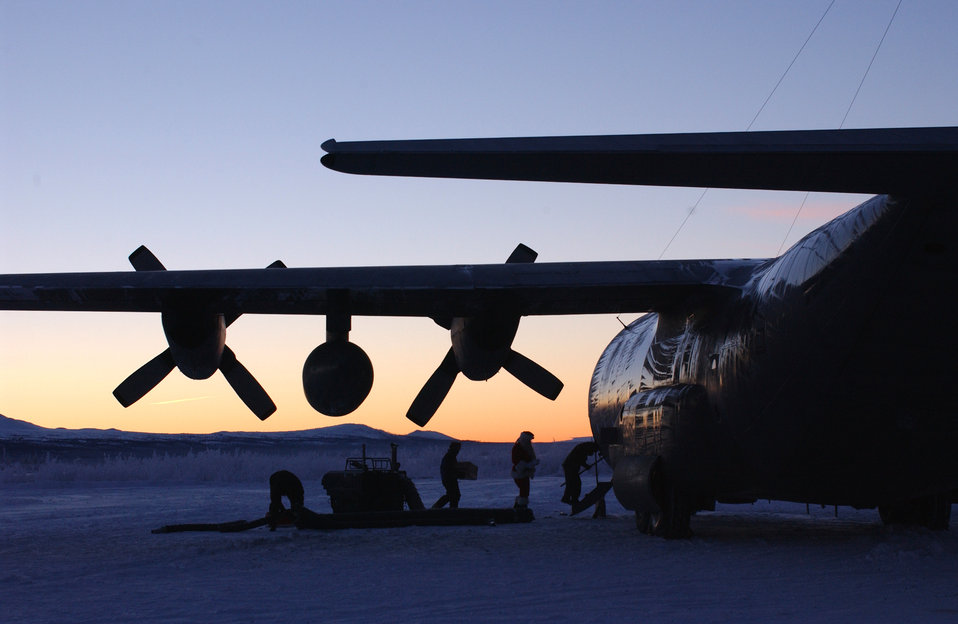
Arctic Village 2006

Santa and his elves board the C-130 Hercules after making a stop in Arctic Village, Alaska. The 517th Airlift Squadron from Elmendorf Air Force Base, Alaska has dropped off more than $8,500 worth of toys and food for the people of the village. Santa made his 40th annual trip to Arctic Village (north of Fort Yukon, Alaska) on Dec 11. Due to a change in aircraft at Elmendorf, this will be the last trip that the 517th Airlift Squadron will make to Arctic Village. The Alaska Air National Guard will add Arctic Village to its short list of destinations during Operation Santa.